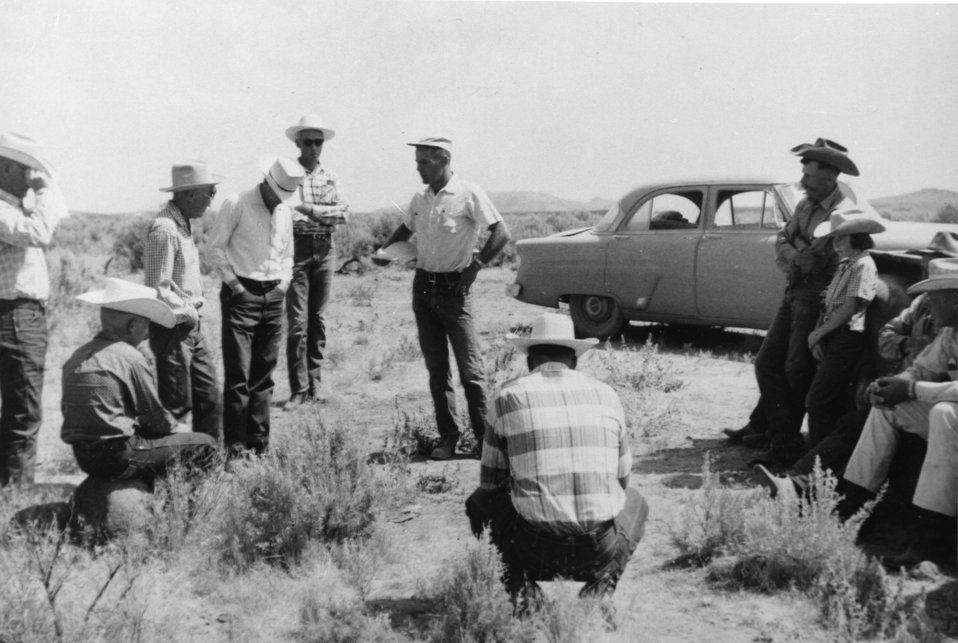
Range Users and BLM Range Conservationist (Bud Schrode) on range inspection tour. circa 1950